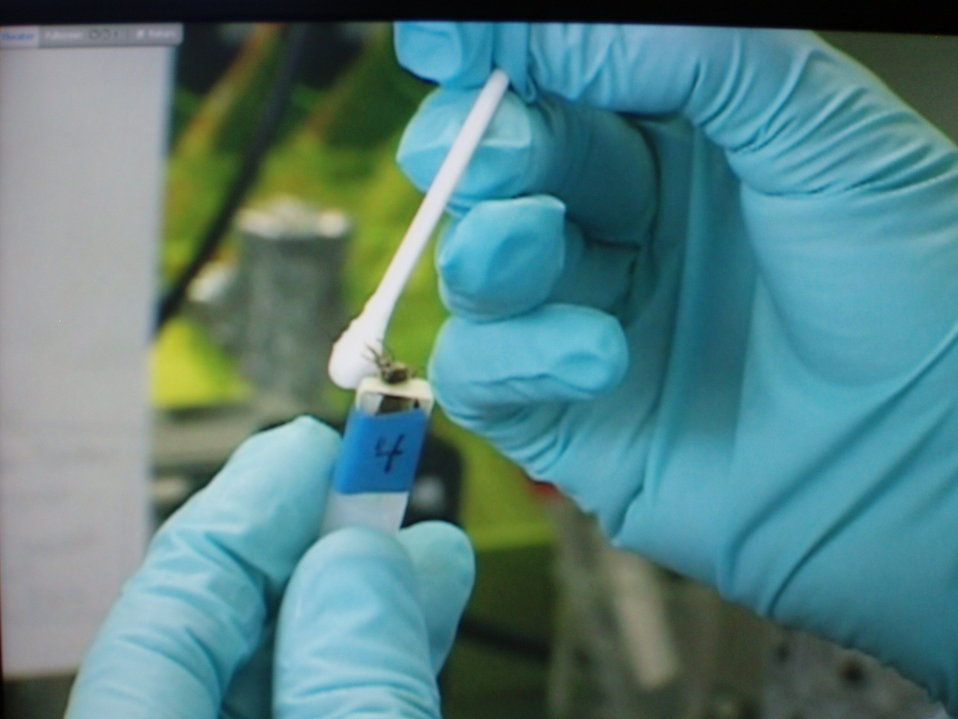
These bomb-sniffing bees are part of the stealthy insect sensor project at Los Alamos National Laboratory (LANL).

Associative learning techniques (also known as Pavlovian) are used to teach the honeybees to signal the presence of certain explosives of chemicals by sticking out their tongues. The bees are held in a container that allows air to flow through while a camera detects their response. The container is designed for use at security checkpoints (airports, military bases, etc.) to discreetly check for explosives.